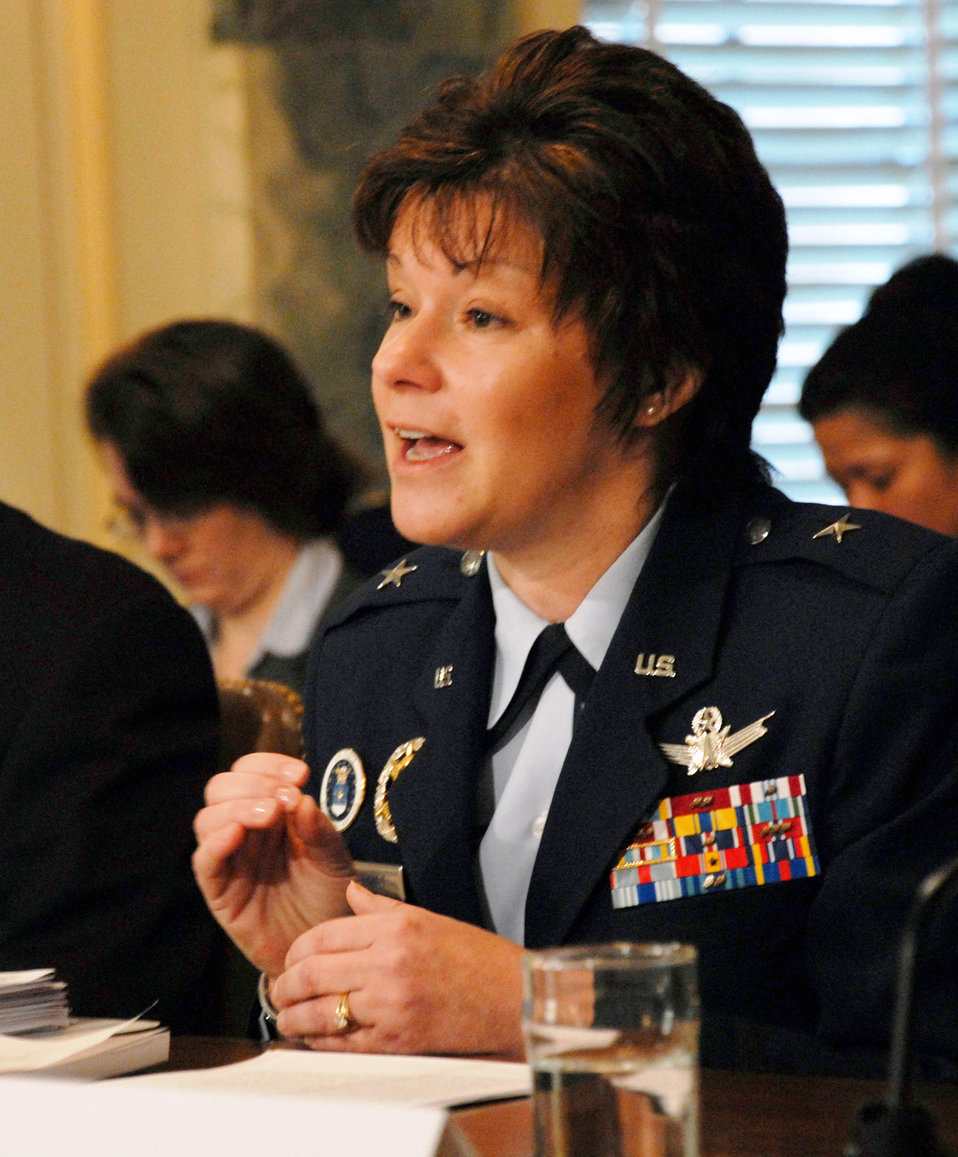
Recruiters discuss challenges with Senate subcommittee

Brig. Gen. Suzanne Vautrinot answers questions for the Senate Armed Services Committee Subcommittee on Personnel Jan. 31. The general is the Air Force Recruiting Services commander. Amid a panel that included sister service counterparts, General Vautrinot provided the senators with an update on current recruiting numbers, challenges and issues.